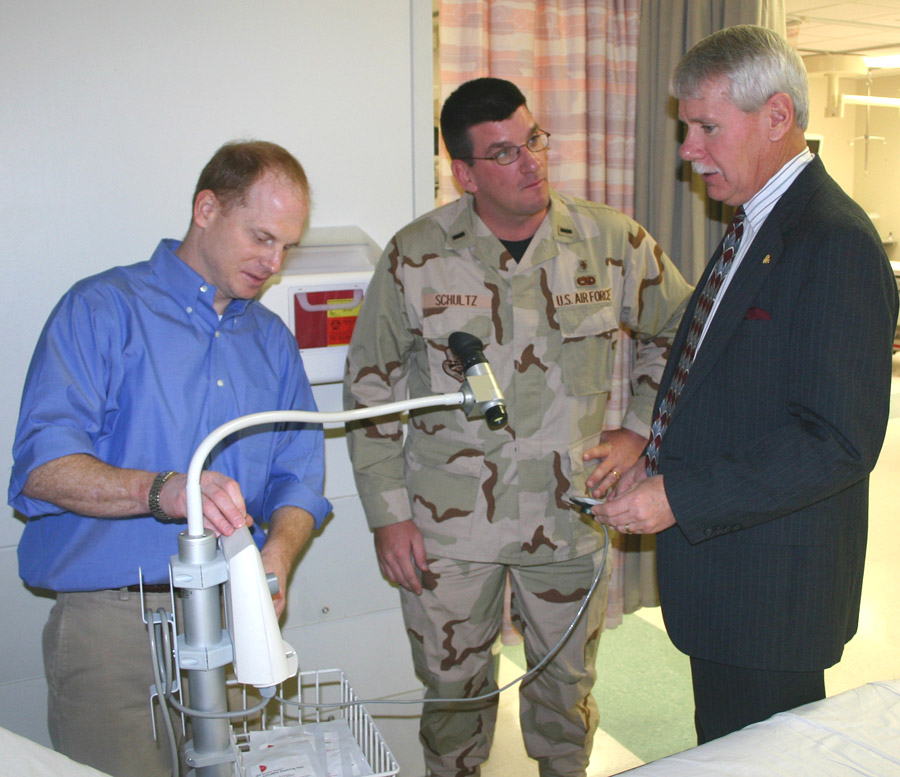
Illuminating view

LACKLAND AIR FORCE BASE, Texas (AFPN) -- David Callard discusses the new infrared imaging systems' vascular viewer with 1st Lt. Keith Schultz (center). The vascular viewer is currently under evaluation in the Wilford Hall Medical Center's emergency department. Mr. Callard is vice president of engineering and product development for the company that created the device. Lieutenant Schultz is an emergency department nurse with the 59th Medical Wing here.